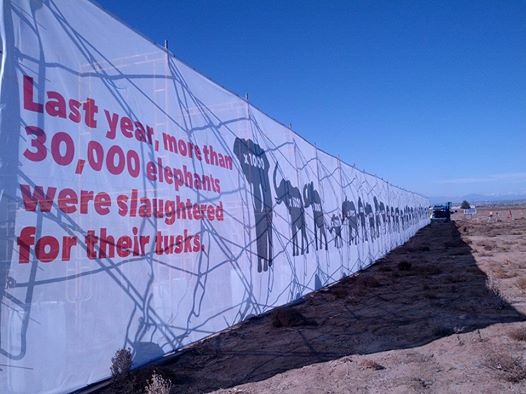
Ivory Crush Banner